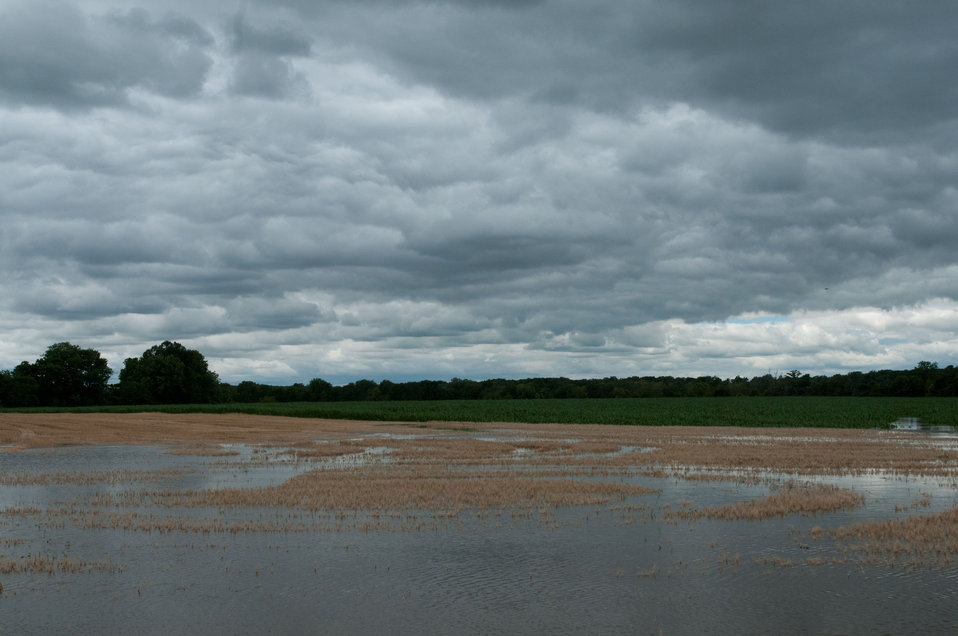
To save crops that were threatened by Mississippi River floodwaters farmers harvested wheat two weeks early from the Yazoo River area near Yazoo City, MS on Monday, May 16. 2011. The lines are from combines and the wide tires.